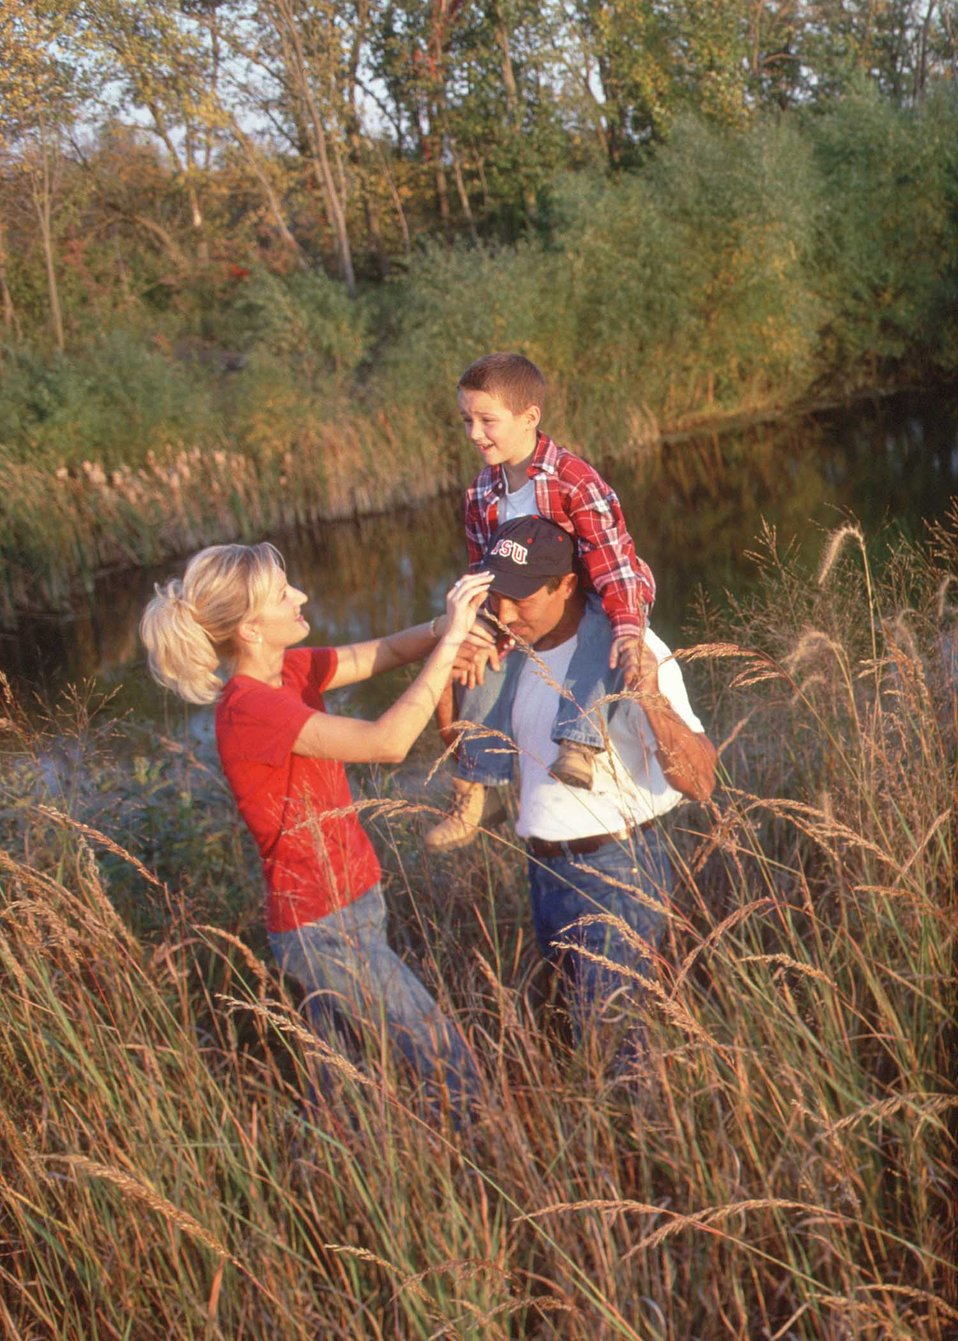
A family enjoys native grass plantings and a farm pond on a farm in central Iowa.